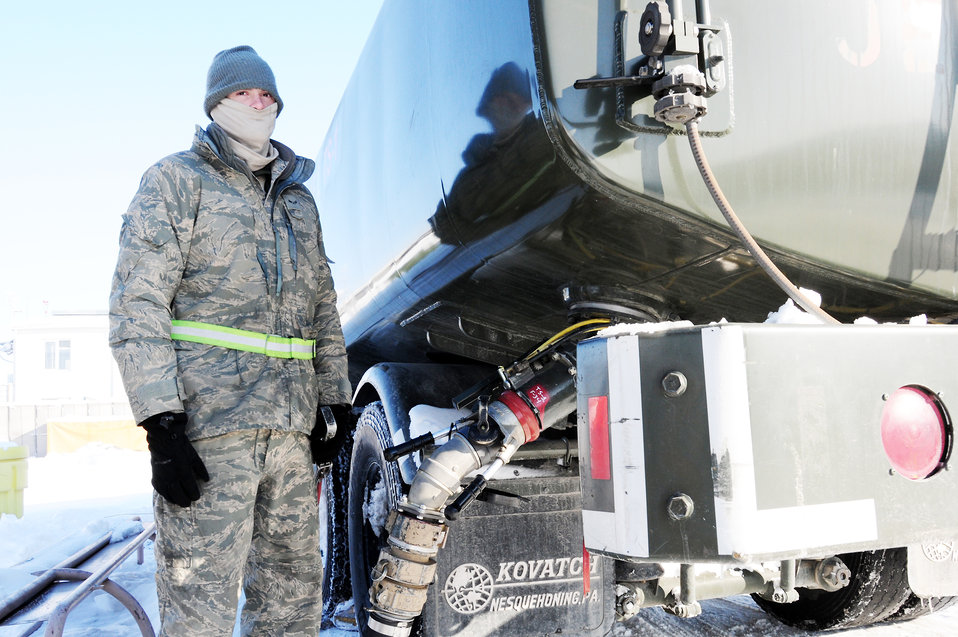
POL flight starts what could be 'benchmark' process

Airman 1st Class Justin Bell, pumps jet fuel into a tank to be transported to the flightline at the Transit Center at Manas, Kyrgyzstan, Jan. 19, 2010. Airman Bell is a 376th Expeditionary Logistics Readiness Squadron petroleum, oil and lubricants specialist. The POL flight here was the first in the AOR to implement a new pre-Airman 1st Class Justin Bell pumps jet fuel into a tank to be transported to the flightline Jan. 19, 2010, at the Transit Center at Manas Air Base, Kyrgyzstan. Airman Bell is a 376th Expeditionary Logistics Readiness Squadron petroleum, oil and lubricants specialist.